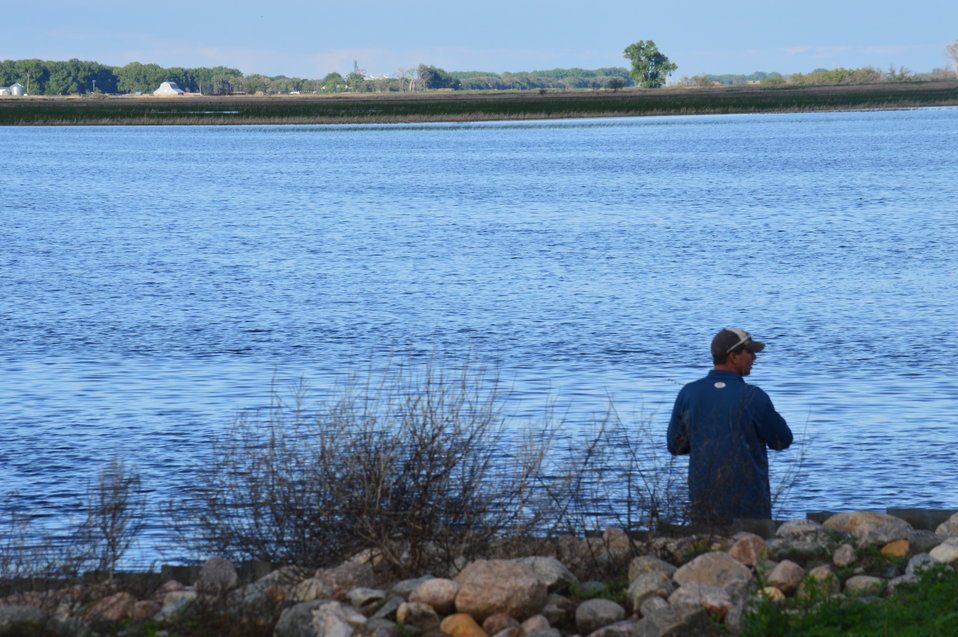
Fishing

Scenery and wildlife at Sand Lake National Wildlife Refuge in South Dakota